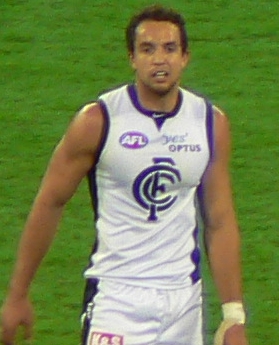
Cain Ackland, Australian rules footballer